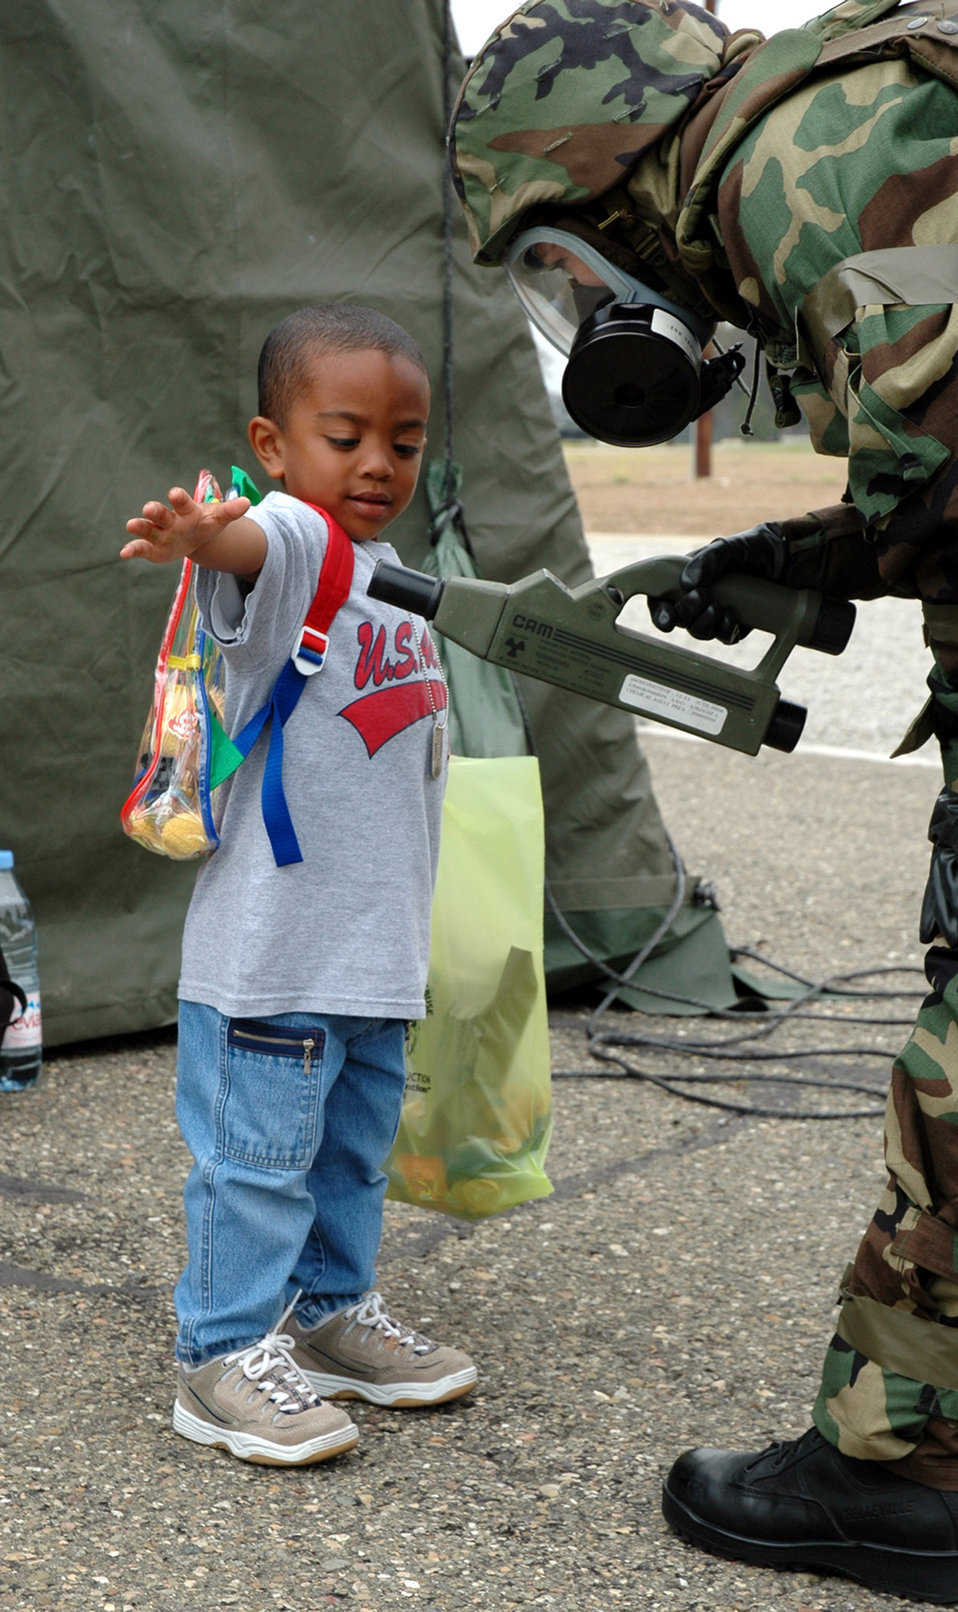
Little deployer

VANDENBERG AIR FORCE BASE, Calif. -- Donti White, 4, is checked for hazardous materials with a chemical agent monitor by Airman 1st Class Amber Scott, during a